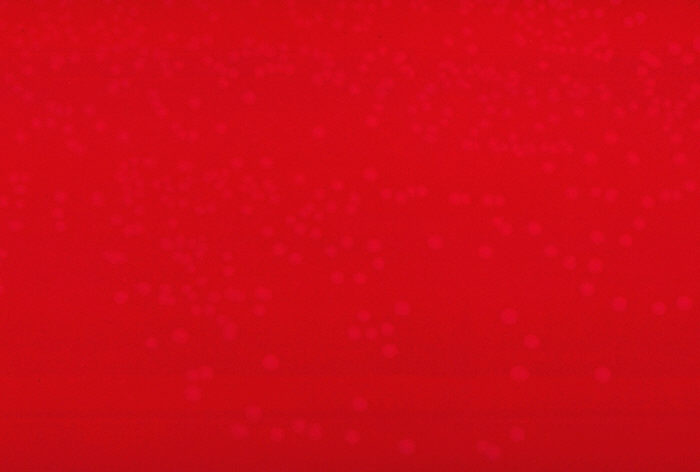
Blood agar plate culture of Erysipelothrix rhusiopathiae.